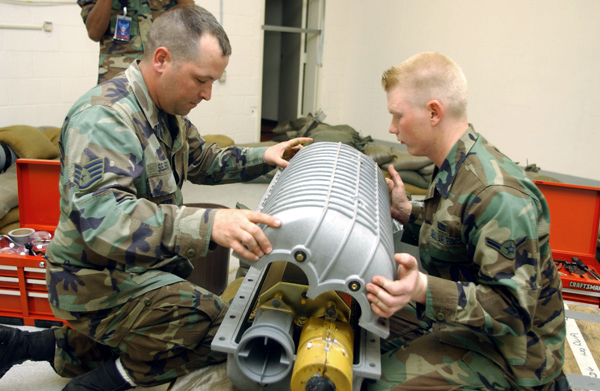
The 'Challenge' continues

VANDENBERG AIR FORCE BASE, Calif. -- Staff Sgt. David Sellers (left) and Airman Michael Woods finish assembling a hardened cable system cover during a missile maintenance team exercise, a Guardian Challenge event. The Airmen are part of the team from the 90th Missile Wing at F.E. Warren Air Force Base, Wyo. Guardian Challenge takes place here May 2 to 6 and tests the wartime readiness of teams representing each missile and space wing unit from Air Force Space Command. Competition events include timed exercises in missile-crew operations, missile and space maintenance, spacelift operations, space and missile communications, missile code controllers, helicopter operations, chefs and security forces.